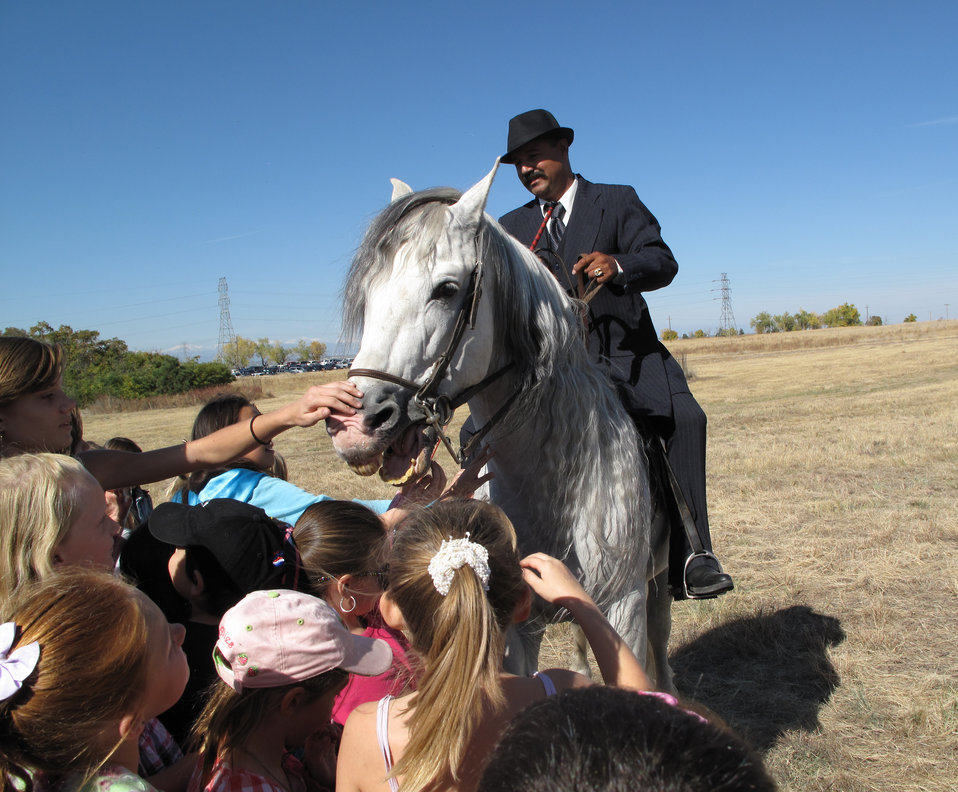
Refuge Round-Up 2010

Jose and his dancing horse are greeted by children.